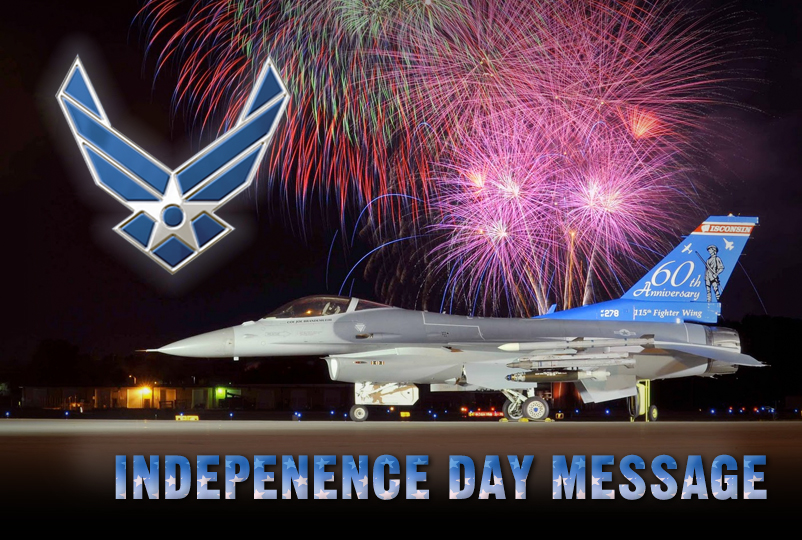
Independence Day Message